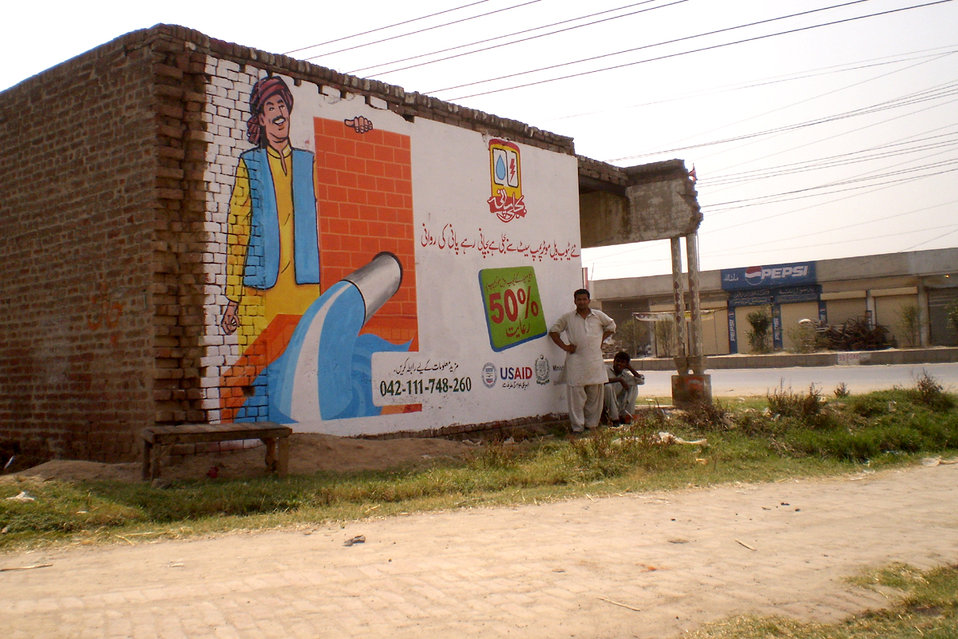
USAID’s Tubewell Efficiency Improvement Program wall painting.